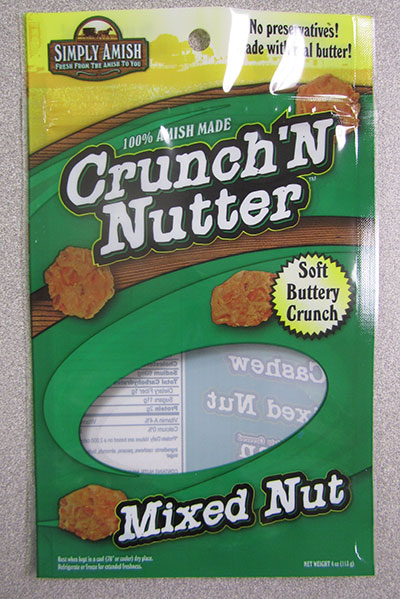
RECALLED – Crunch'N Nutter Mixed Nut

January 17, 2014 – Product Recall – Merrell Food Group Issues Allergy Alert on Undeclared Peanut in “Crunch’N Nutter - Mixed Nut.